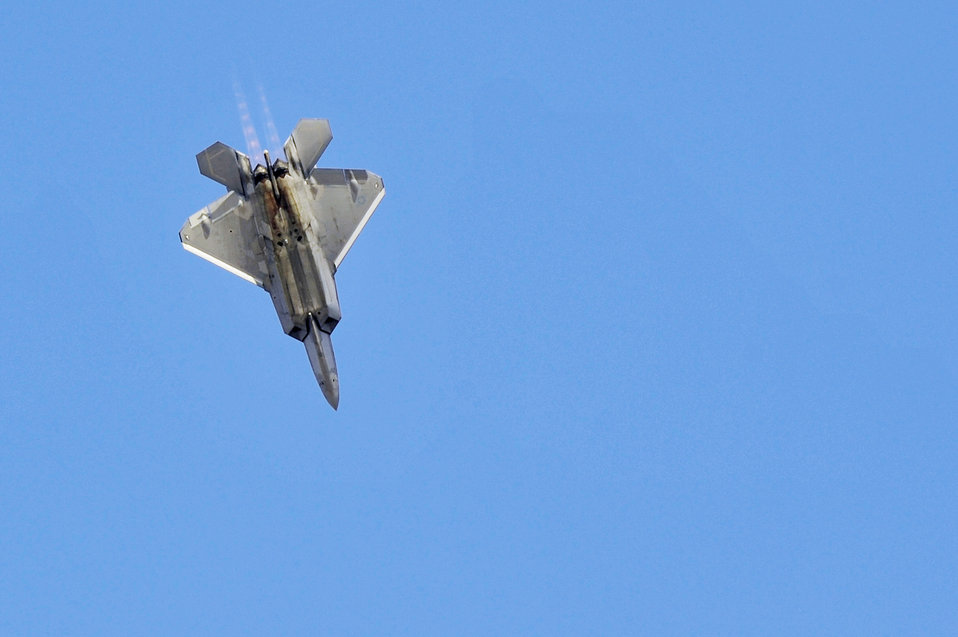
Dubai Air Show

An F-22 Raptor performs a dive Nov. 15, 2009 at the Dubai Air Show in the United Arab Emirates. The F-22 provides the Air Force with a combination of stealth, supercruise, maneuverability and integrated avionics.